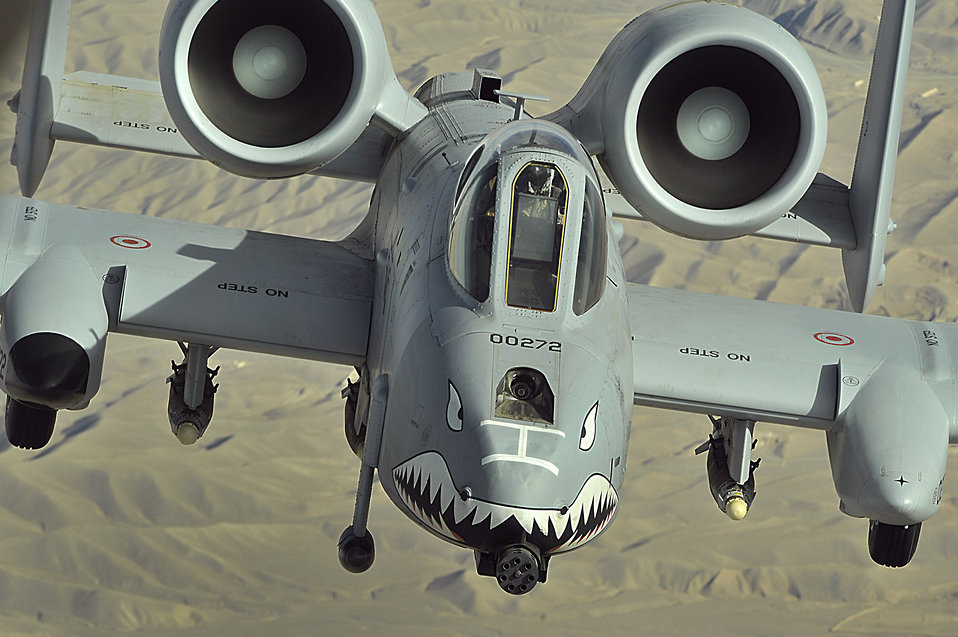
Flying high in the sky

An A-10 Thunderbolt II flies a close-air-support mission over Afghanistan on Nov. 7. The A-10 has excellent maneuverability at low air speeds and altitude, and are highly accurate weapons-delivery platforms. The first production A-10A was delivered to Davis-Monthan Air Force Base, Ariz., in October 1975. It was designed specially for the close-air-support mission and had the ability to combine large military loads, long loiter and wide combat radius, which proved to be vital assets to the United States and its allies during Operation Desert Storm and Operation Noble Anvil.